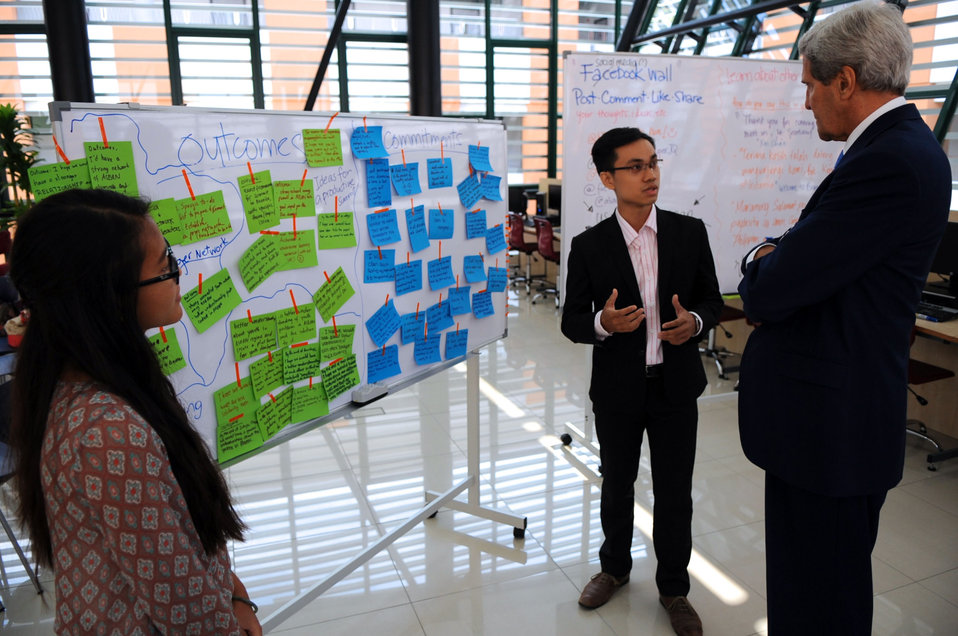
Secretary Kerry Listens to a Student

U.S. Secretary of State John Kerry listens to a student explain a program before attending a Youth Leaders meeting in Bandar Seri Begawan, Brunei, before the U.S.-ASEAN Summit meeting begins on on October 9, 2013.